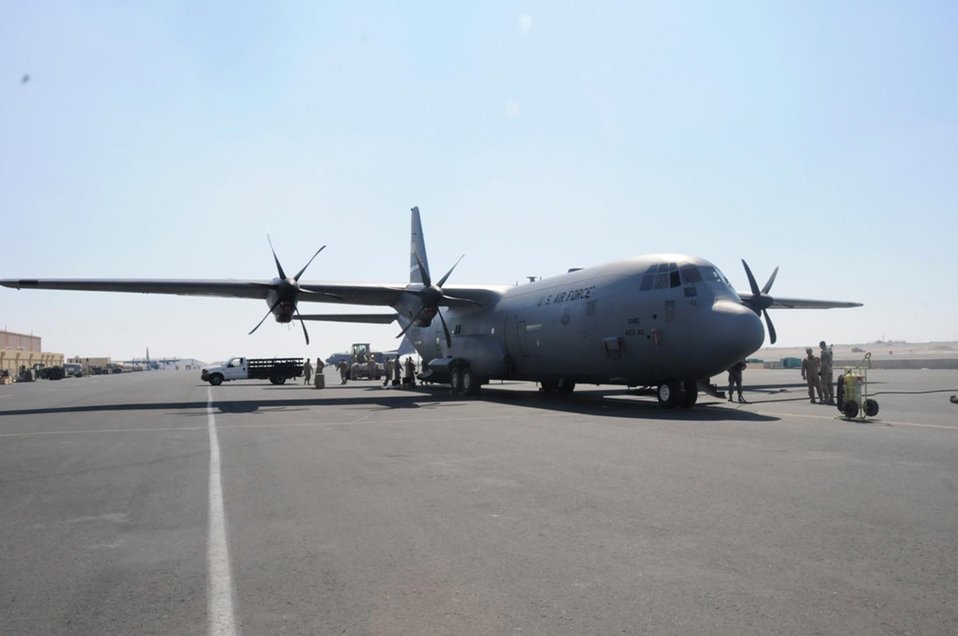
C-130J deploys to Southwest Asia

A C-130J Hercules arrives to the 379th Air Expeditionary Wing Feb. 8 at a Southwest Asia air base. The C-130J is from the 41st Airlift Squadron from Little Rock Air Force Base, Ark.